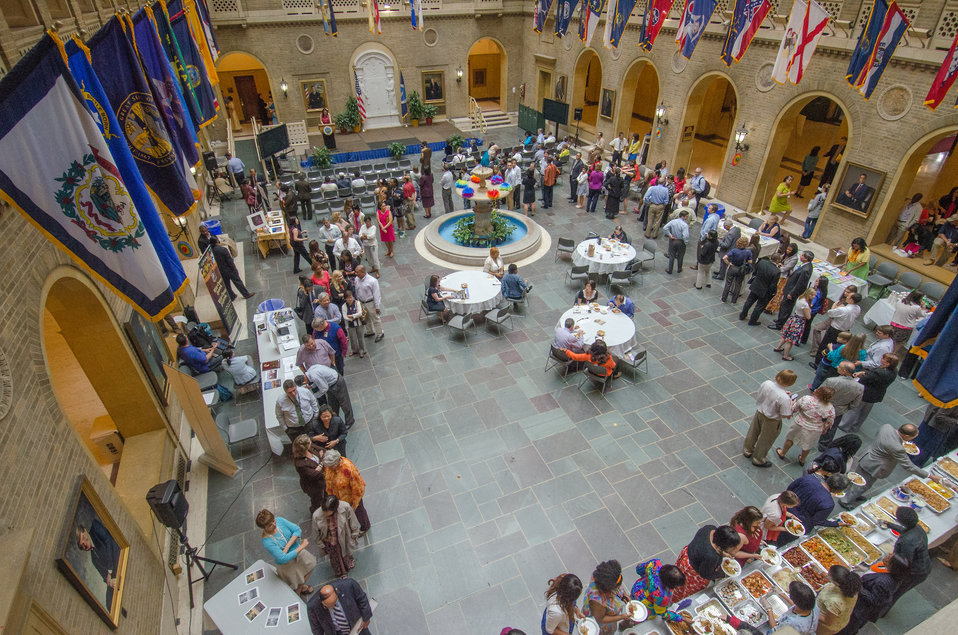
A long line forms for a taste of a dozen different Asian and Pacific Islander foods during the U.S. Department of Agriculture’s (USDA) Asian Pacific American Heritage Month Observance, at the USDA headquarters in Washington, D.C., on Thursday, May 23, 2013. This year’s theme is “Building leadership; Embracing the Cultural Values and Inclusions.”